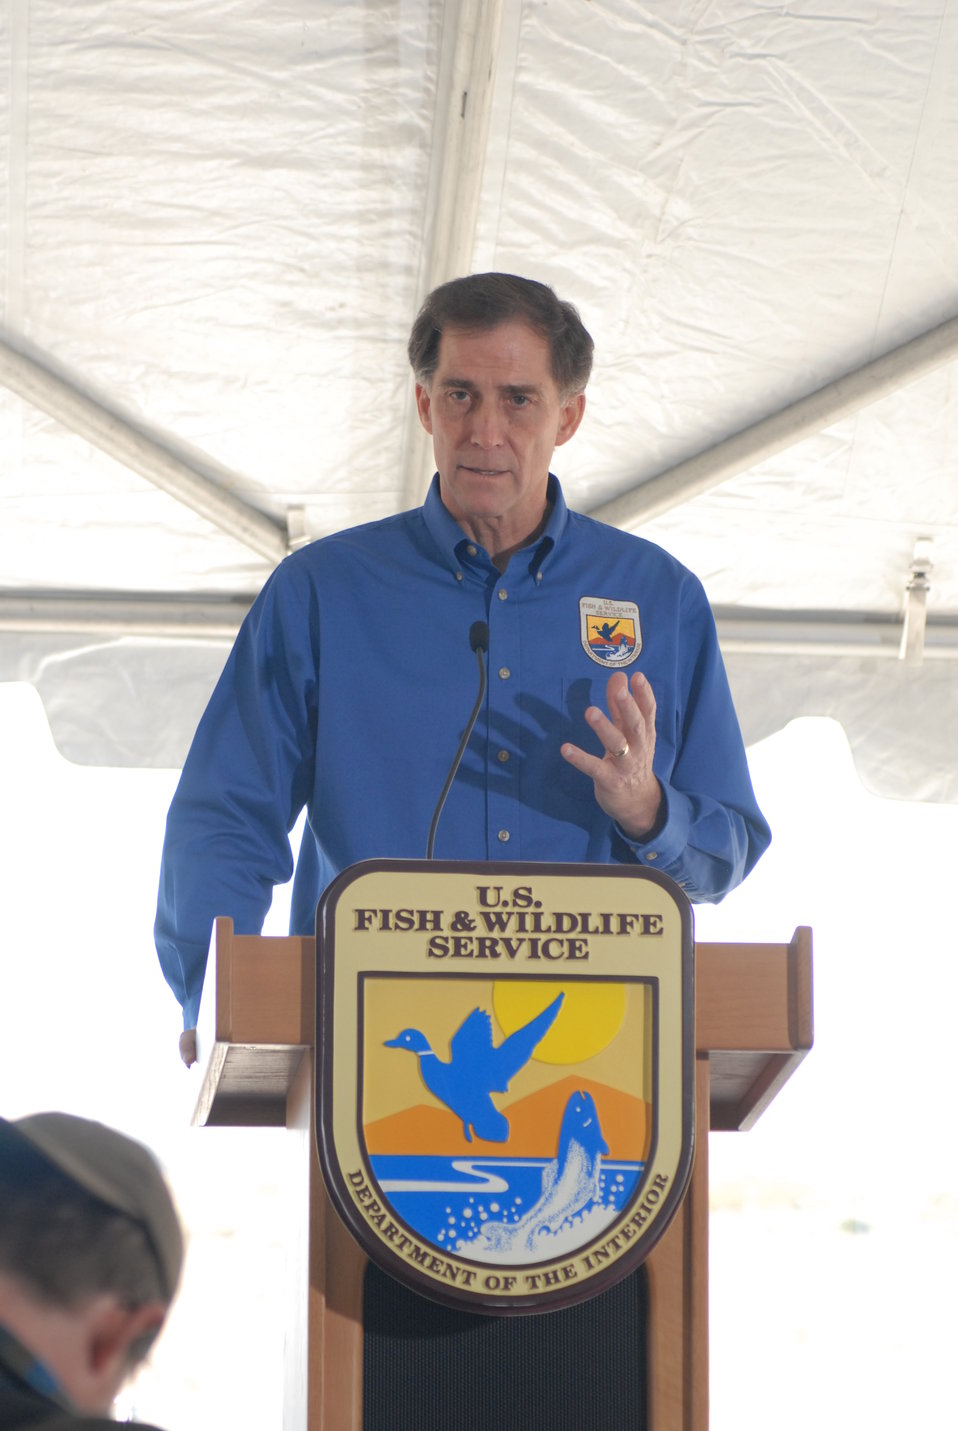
U.S. Fish and Wildlife Service Director Dan Ashe speaks at the U.S. Ivory Crush.